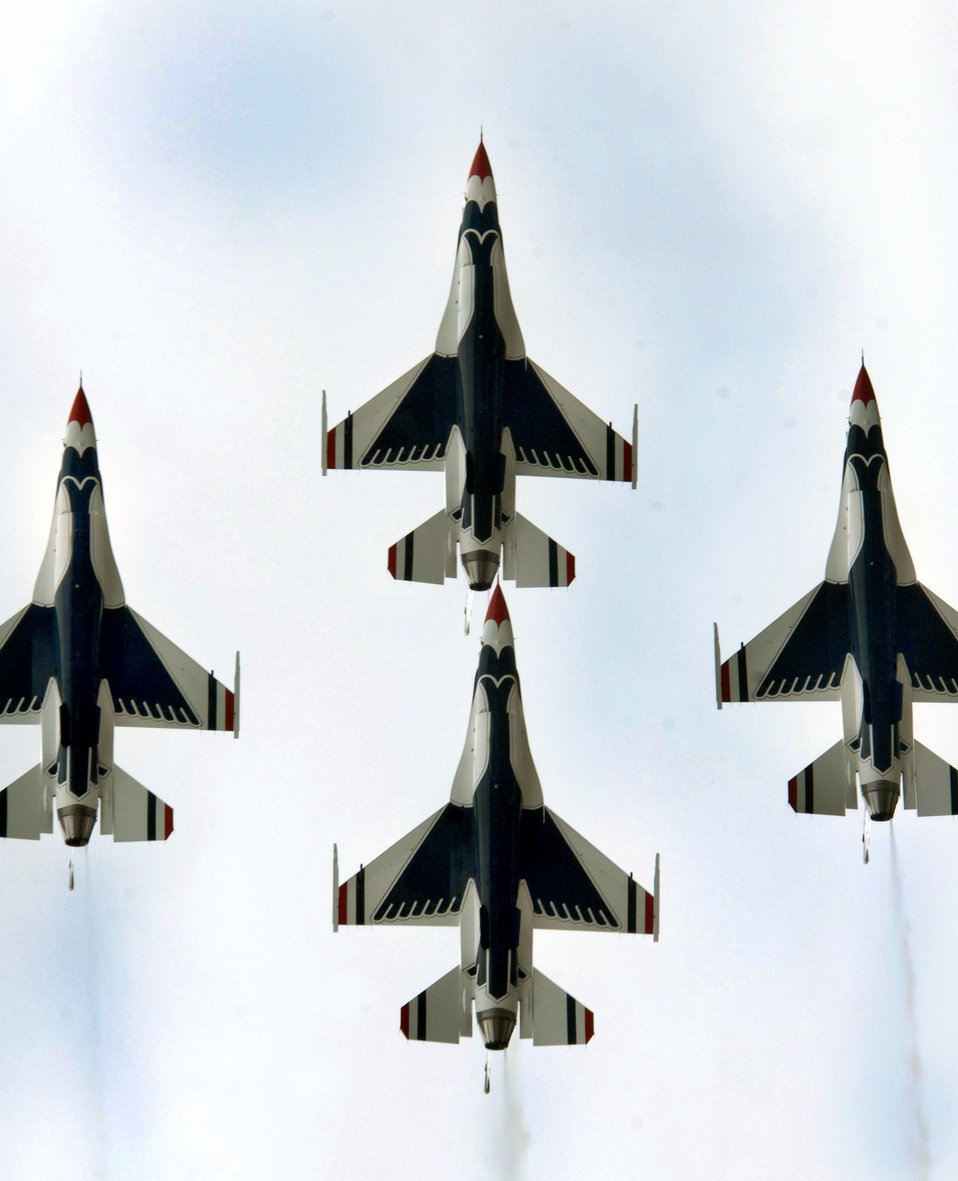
Thunderbirds 'Soar into Solstice' at Eielson

Four Air Force Thunderbird F-16 Fighting Falcons fly together in formation for more than 6,000 spectators during the June 24 airshow at Eielson Air Force Base, Alaska. The